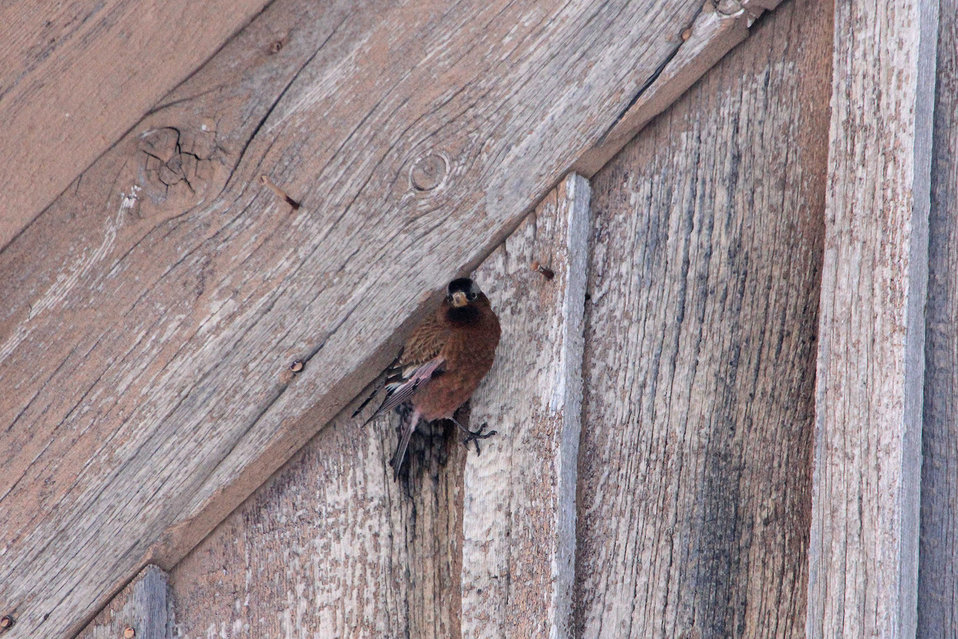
Shelter from the Storm

A rosy finch seeks cover at the historic Miller Barn during a spring storm on the National Elk Refuge.